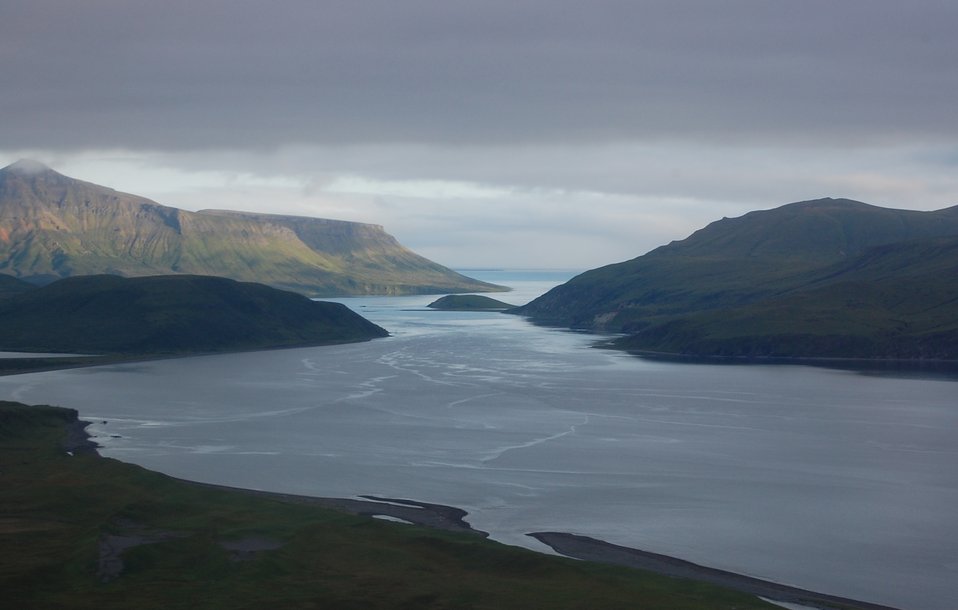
Unimak Landscapes

SE Unimak Island, Alaska Maritime National Wildlife Refuge